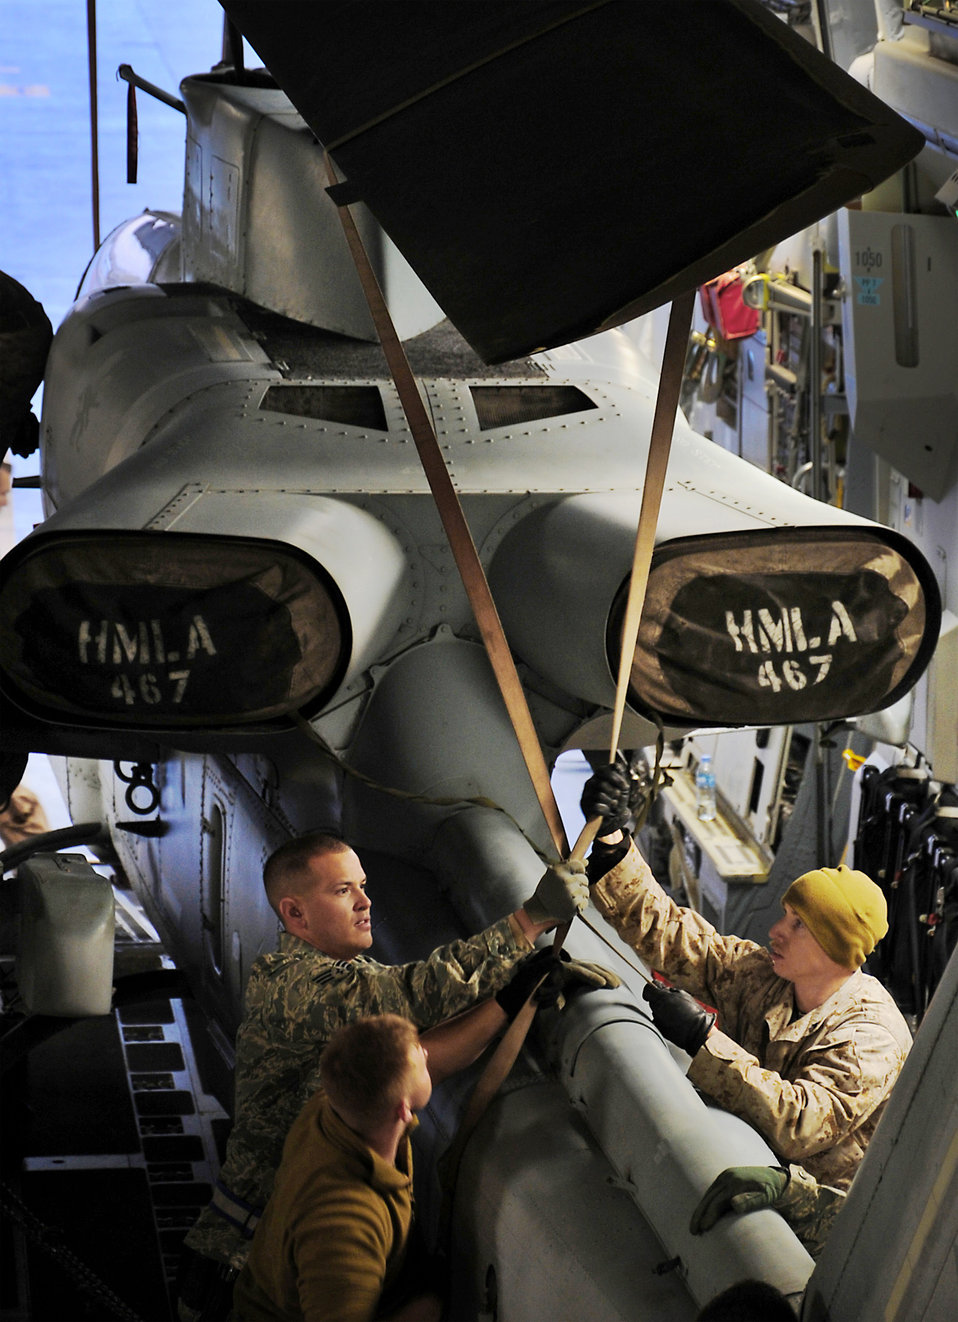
A joint effort

Senior Airman Eugene Lineham helps Marines secure an AH-1W Super Cobra aboard a C-17 Globemaster III Jan. 14, 2011, for transportation to a forward location in Southwest Asia. Airman Lineham is a member of the 386th Expeditionary Logistics Readiness Squadron.